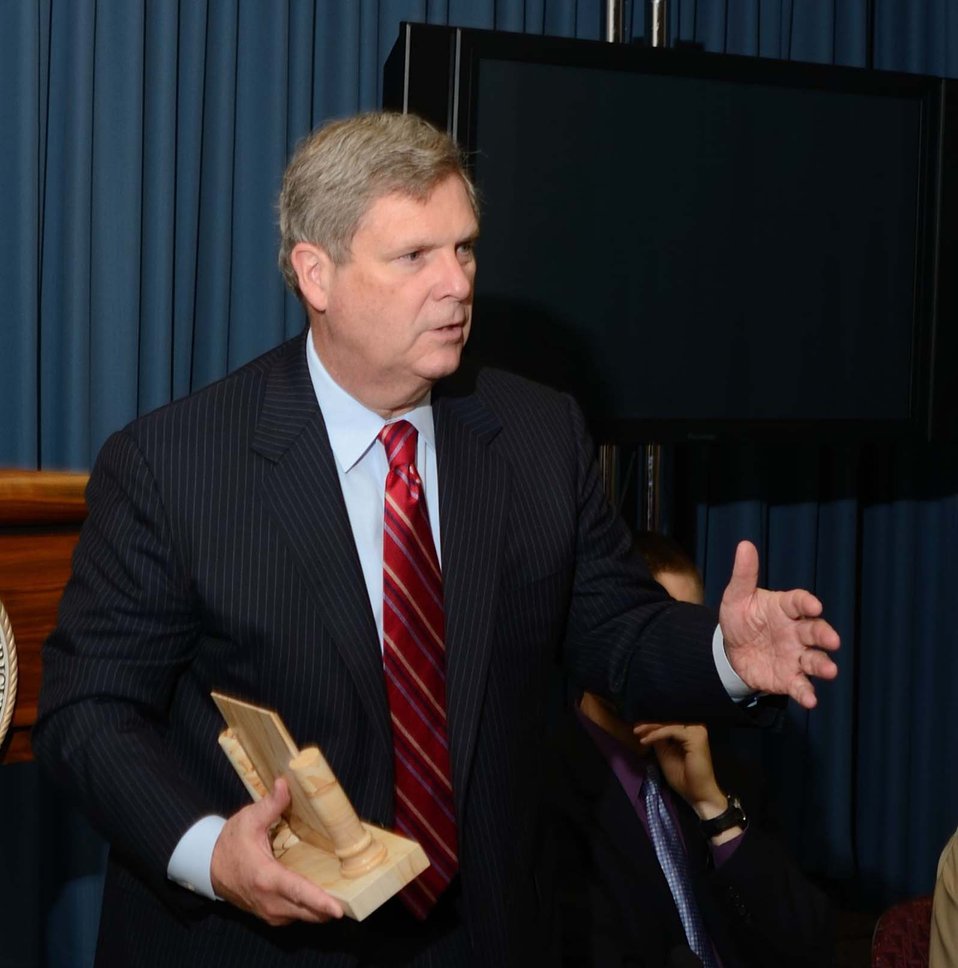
Agriculture Secretary Tom Vilsack receives the 2011 Chairman’s Award for vision, dedication and focus on the matters that the President’s Board of Advisors on Historically Black Colleges and Universities is charged to advance, during a meeting at the U.S. Department of Agriculture, in Washington, D.C. on Wednesday, October 19, 2011.